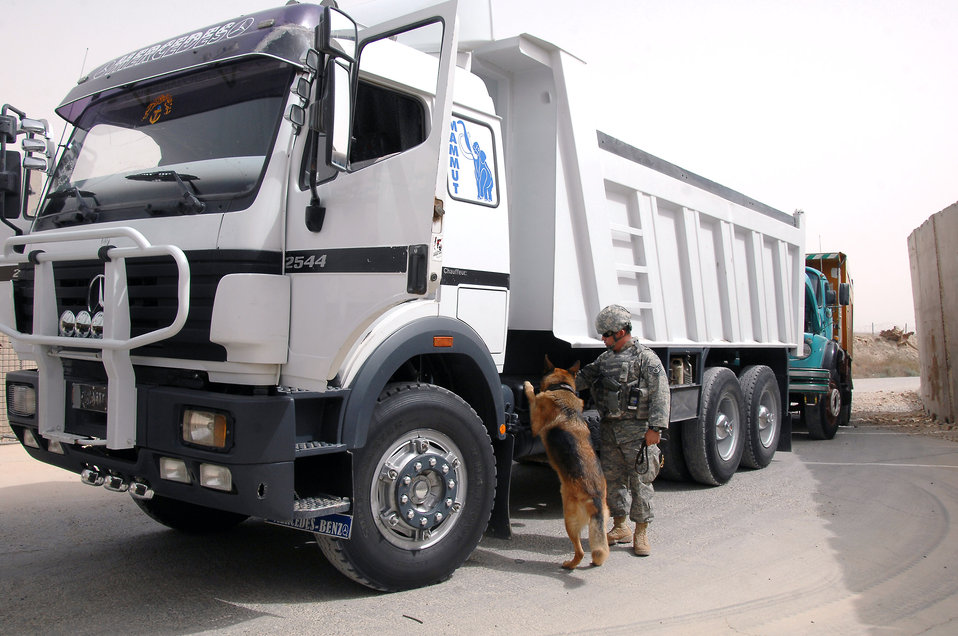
Some joint missions are for the dogs

Staff Sgt. Sean Neisen searches vehicles with his dog, Goro E114, July 8 at the Vehicle Control Center at Ali Base, Iraq. Dog handlers are responsible for ensuring the safety and security of all coalition forces assigned here by searching vehicles that drive onto Contingency Operations Base Adder and Ali Base daily. Sergeant Neisen is a military working dog handler deployed to the 407th Provost Marshal Office from Ramstein Air Base, Germany.